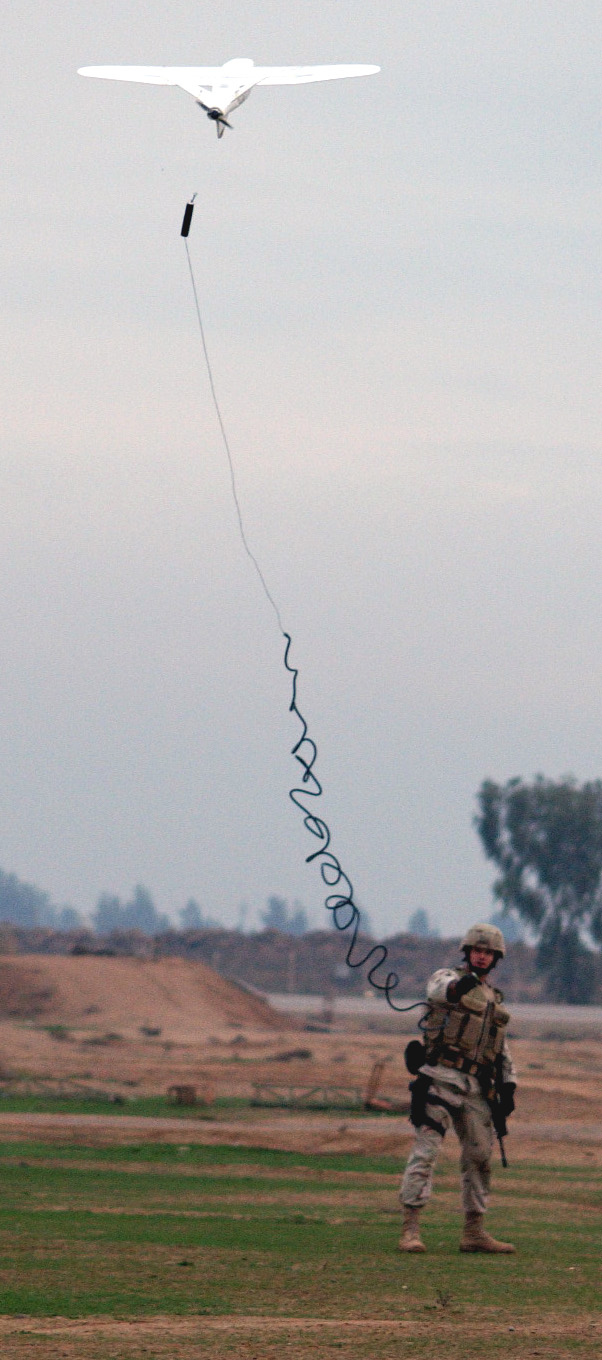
OIF, Desert Hawk

BALAD AIR BASE, Iraq (AFPN) -- Desert Hawk launches as Senior Airman David Tillery, stands fast. The 7-pound unmanned aerial vehicle allows security forces to see beyond a base's perimeters and provide accurate, real-time visual assessments of detected threats. Airman Tillery is assigned to the 332nd Expeditionary Security Forces Squadron and is deployed from Shaw Air Force Base, S.C.